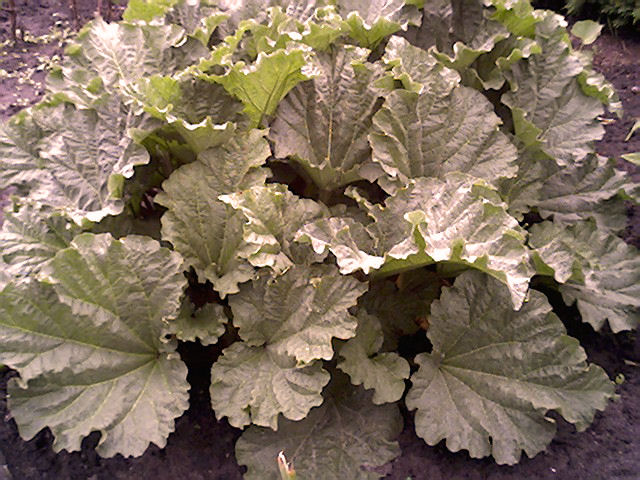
Rabarber. Serie foto's van een rabarberplant van 25 maart 2005 tot en met 13 mei 2005, één foto per week. Bestandsnamen: Rabarber-serie-1.jpg tot Rabarber-serie-8.jpg. Foto zelf gemaakt.